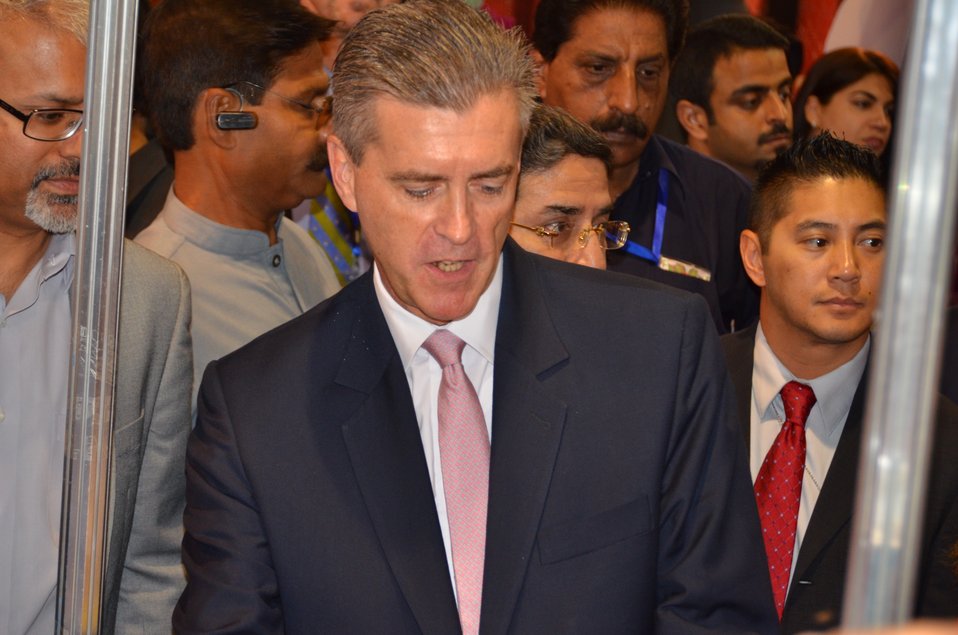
USAID Firms Project at Expo Pakistan 2013

USAID Firms Project Stall - The US Ambassador admiring the Pakistani Dates